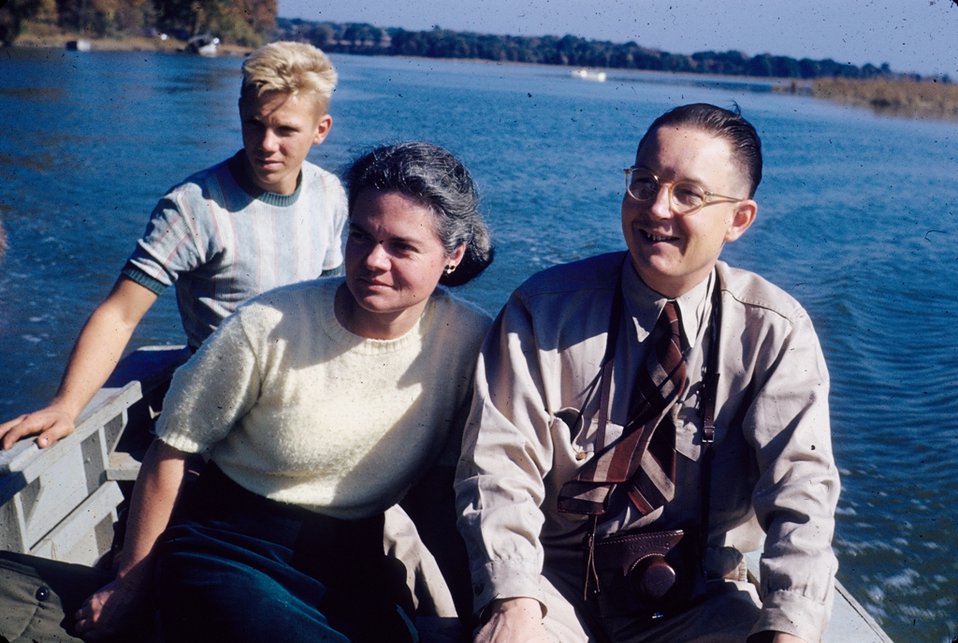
Lucille Farrier Stickel

Contaminant researcher Lucille Farrier Stickel (center), former director of the Patuxent Research Center in Maryland, enjoys a boat ride.